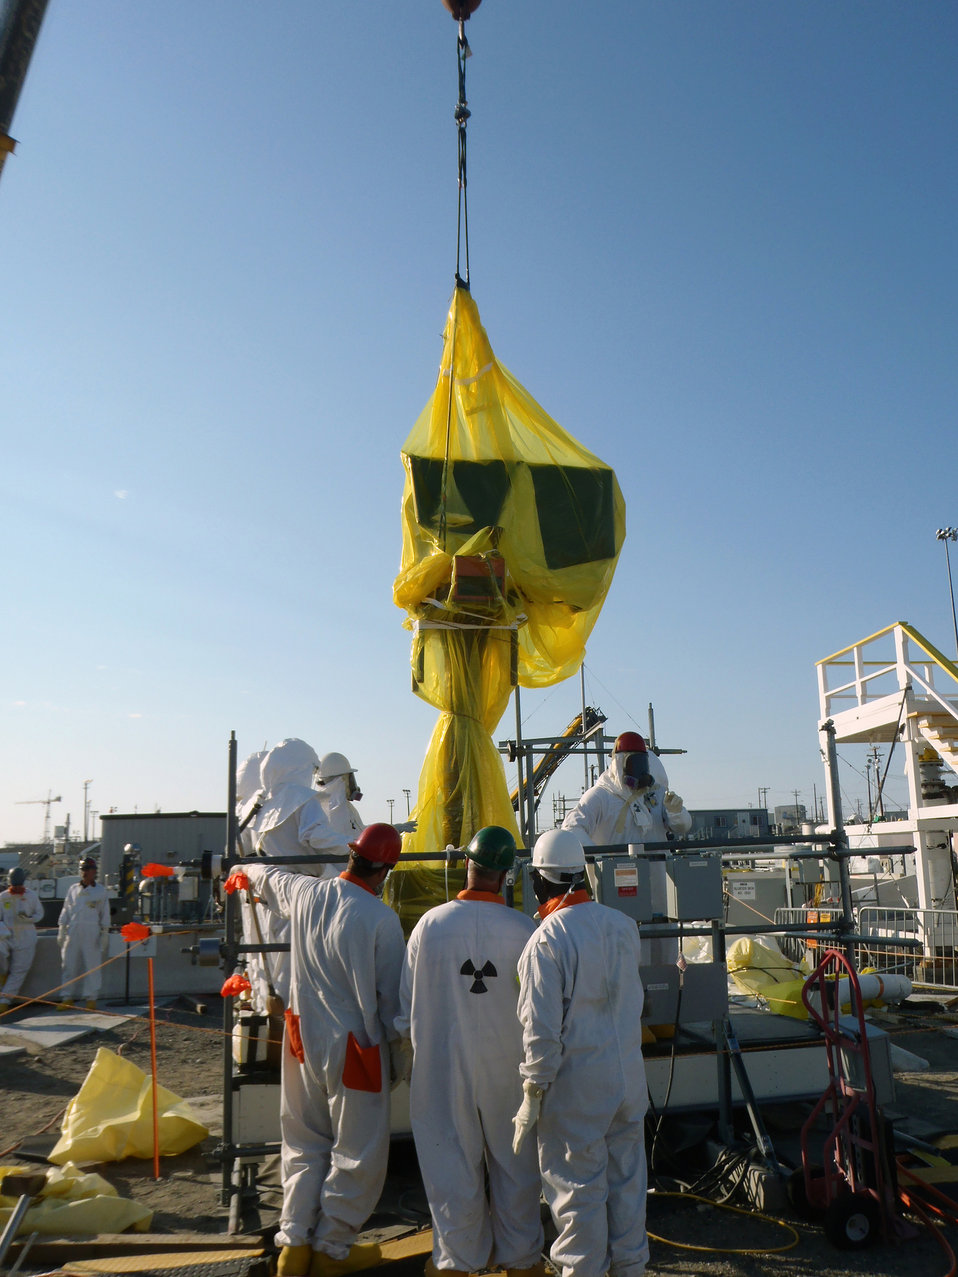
Workers are shown installing a pump in C-109, a single-shell tank that once held 63,000 gallons of waste.

The pump was a critical tool in removing the waste from the tank and transferring it to a newer receiving tank for storage.